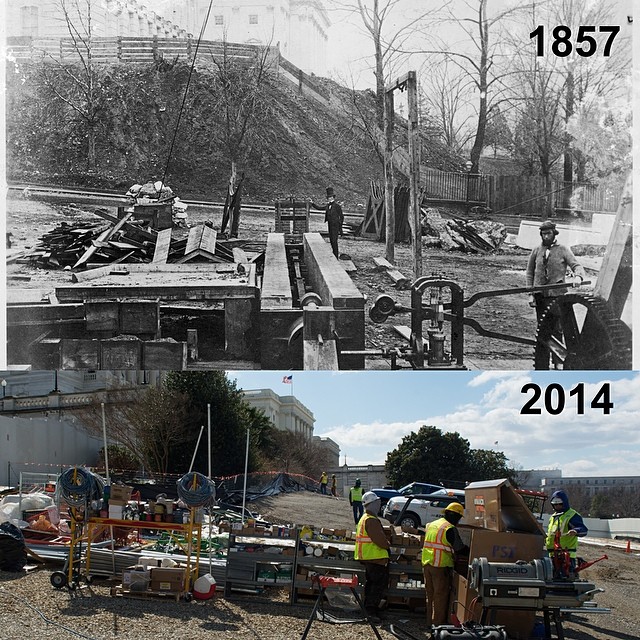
Work on the #CapitolDome then and now.